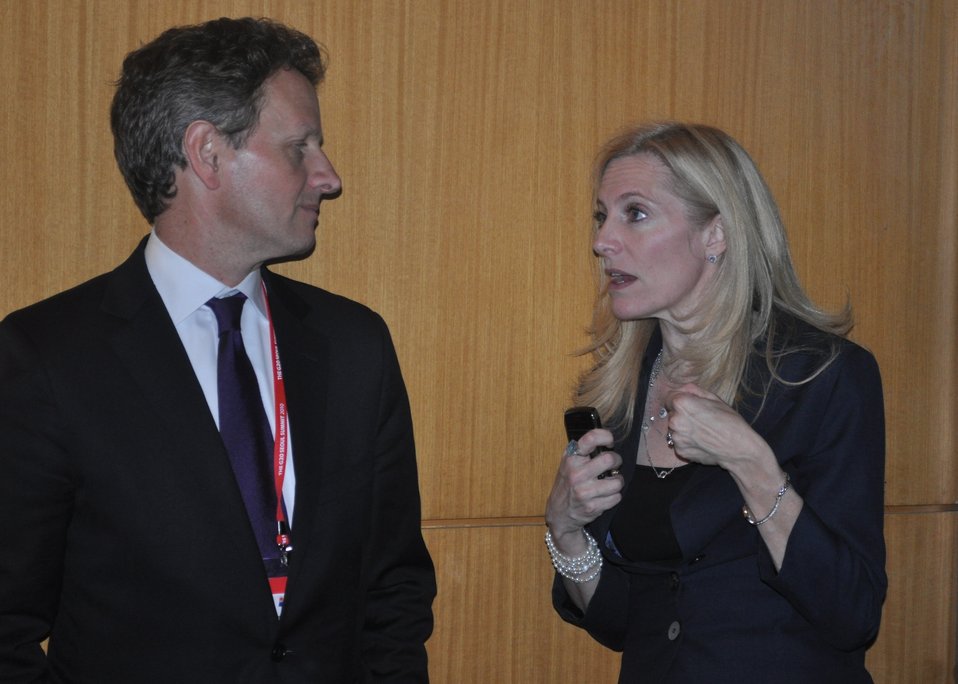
Geithner visit to Asia, November 4-12, 2010

Secretary Geithner and Under Secretary for International Affairs Lael Brainard attended a number of bilateral, plenary and ministerial meetings at the G-20 Summit in Seoul, South Korea.